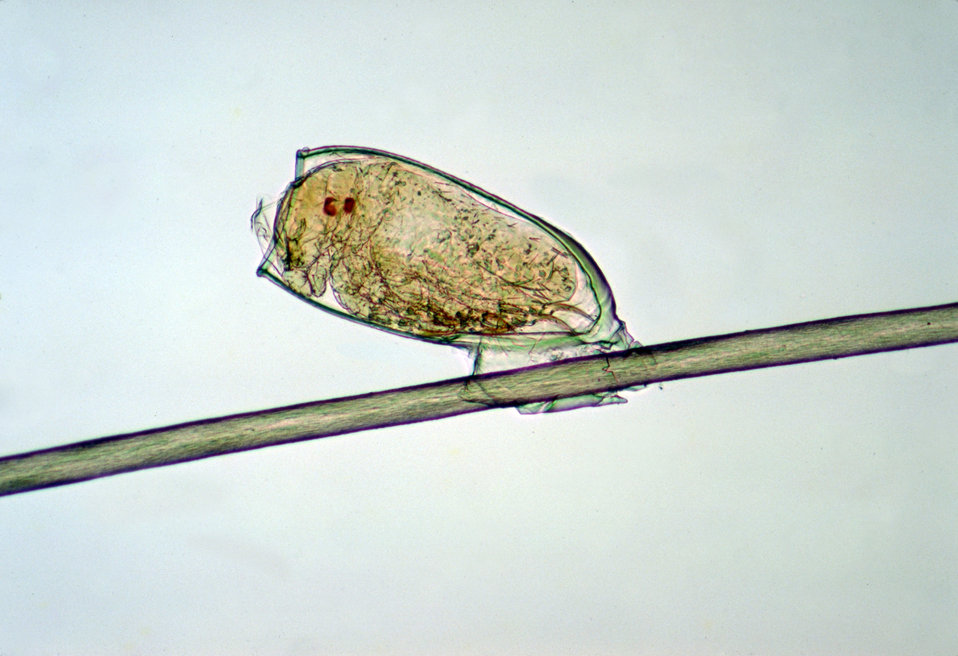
Nymph of head louse, Pediculus humanus var capitis parasite, athat was about to emerge from egg.